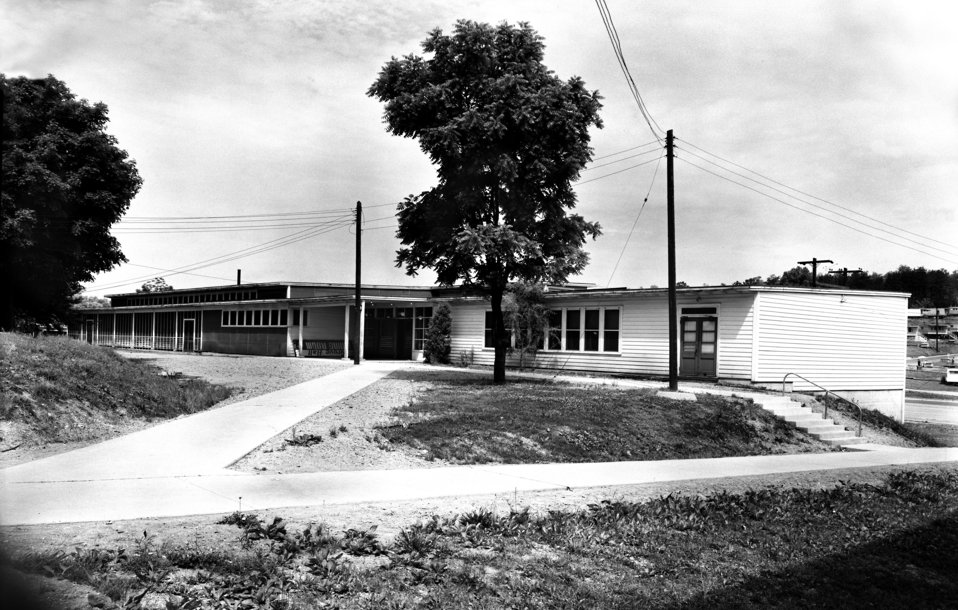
Grove Hall Oak Ridge 1948

4546-12 DOE photo Ed Westcott 5-24-1948 Oak Ridge Tennessee